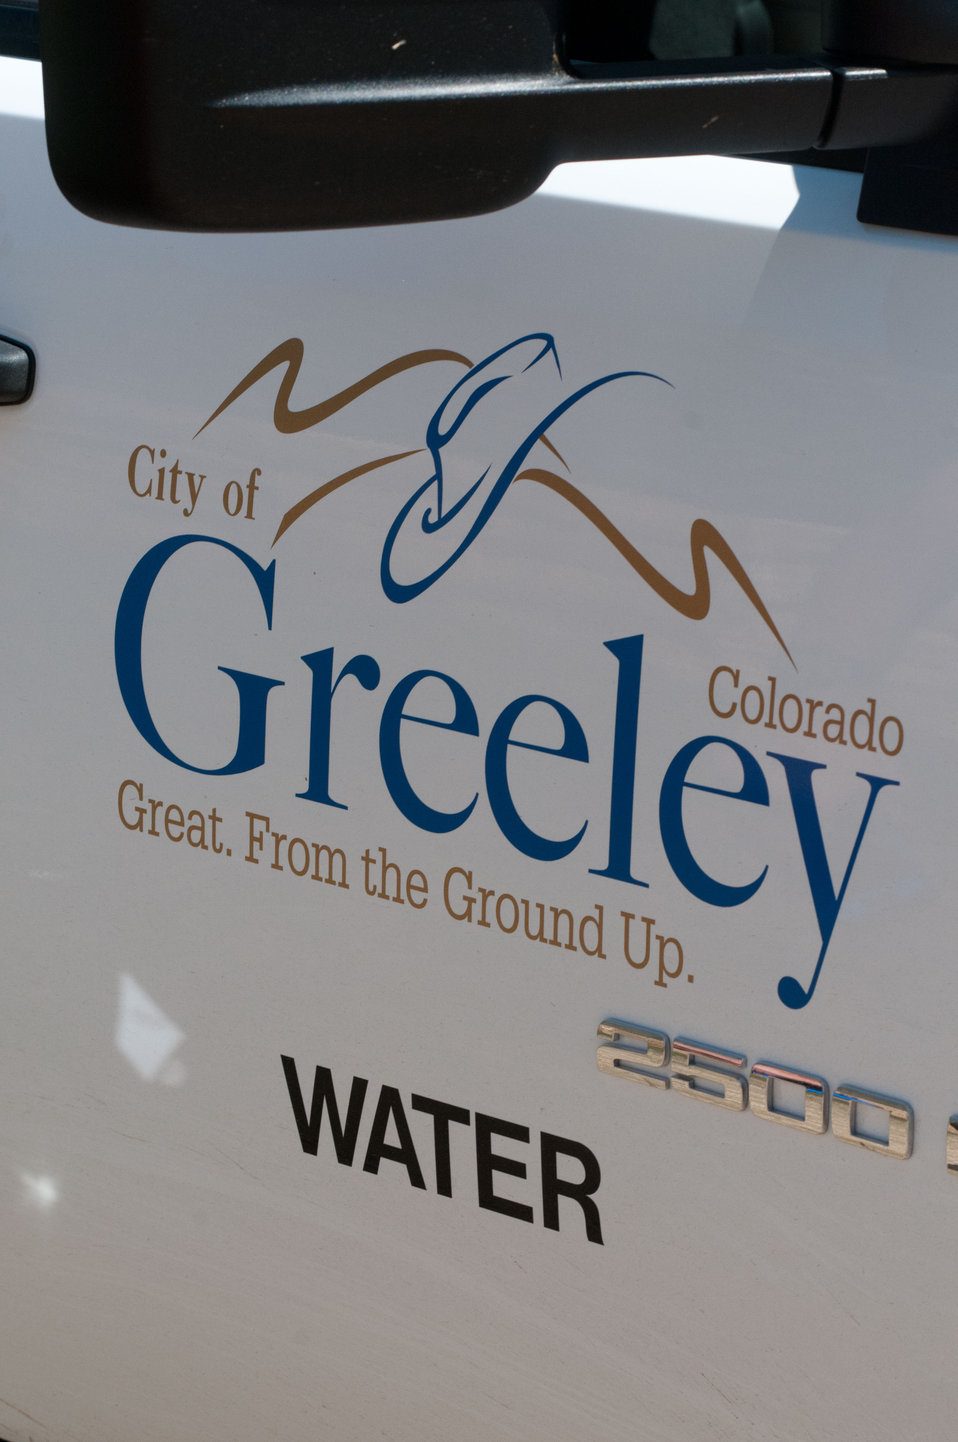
City of Greeley Water Resource Administrator Randy Gustafson' pickup truck door at the aerial operations center for the application of straw to mitigate soil and ash runoff from the mountainous terrain leading to Seaman Reservoir, the drinking water resource for the City of Greeley, on Friday, July 20, 2012, near Fort Collins, Colorado. The water in the reservoir remains clean and clear, while downstream water flow has gone from famous Colorado clear water to a nearly black flow of water heavily laden with ash, silt, and burnt debris that recent thunderstorms have already washed down from the mountainsides.